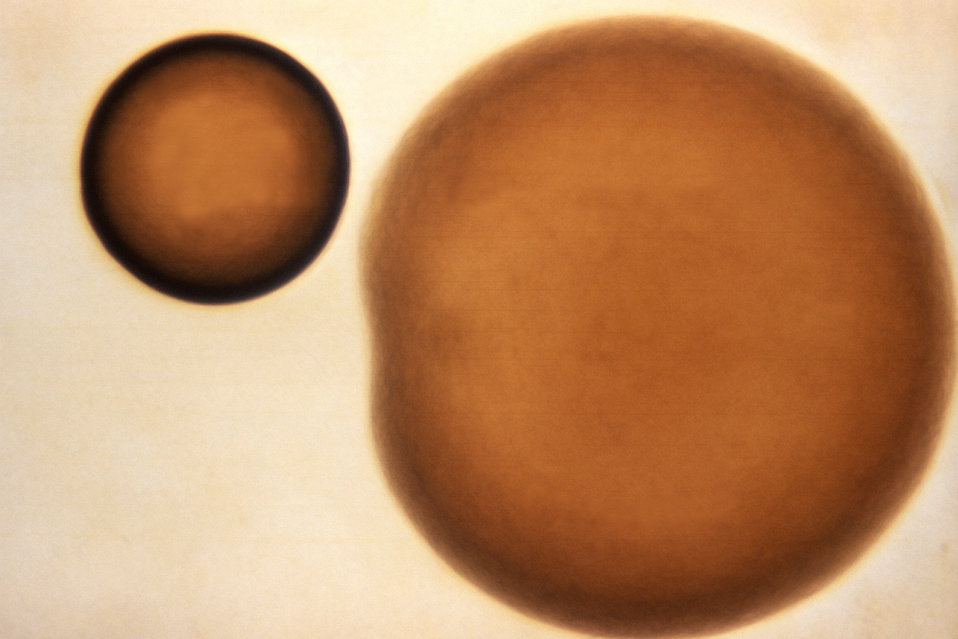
This represents two N. gonorrhoeae colonies growing on GC-base media with IsoVitalex after 24 hours of growth; Mag. 50X.